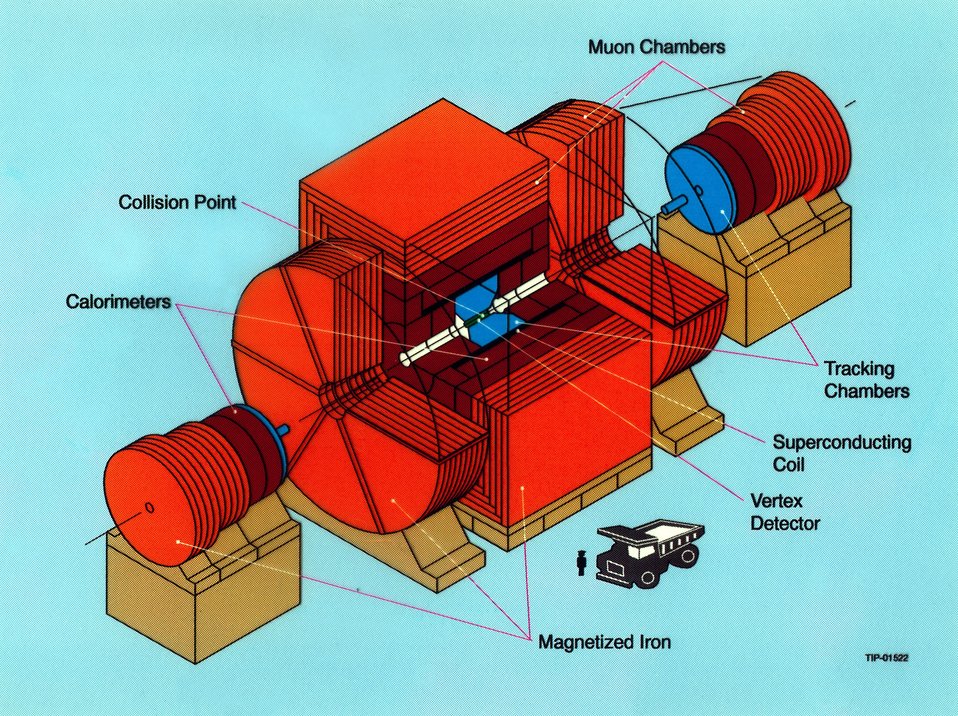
SSC SCHEMATIC.

THE SSC IS UNDER CONSTRUCTION IN ELLIS COUNTY, TEXAS. IT WILL CONSIST OF A COLLIDER COMPRISING TWO RINGS OF SUPERCONDUCTING MAGNETS HOUSED UNDERGROUND IN A RACE-TRACK SHAPED TUNNEL THAT IS 14 FEET IN CROSS-SECTION AND 54 MILES IN CIRCUMFERENCE. AFTER PASSING THROUGH A CHAIN OF FOUR INJECTOR ACCELERATORS, TWO BEAMS OF PROTONS TRAVELING IN OPPOSITE DIRECTIONS WILL BE FURTHER ACCELERATED TO NEARLY THE SPEED OF LIGHT, COLLIDING AT 20 TRILLION ELECTRON VOLTS.